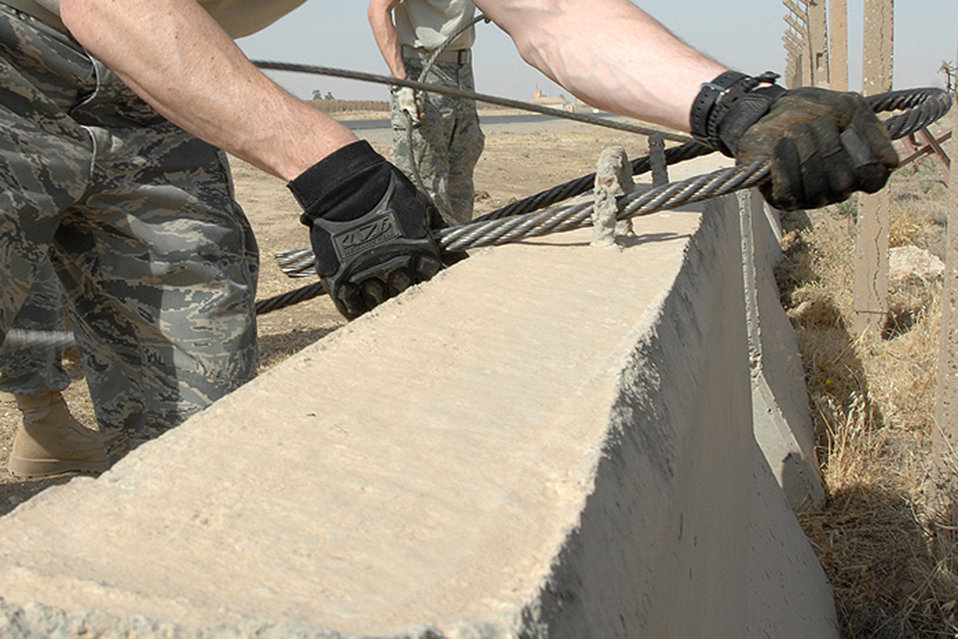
Volunteers create safety barrier

A volunteer weaves aircraft cables through jersey barriers June 5 near the Kirkuk Air Base, Iraq, flightline. Airmen here teamed up to place barriers, cables and signs around the airfield, mitigating vulnerabilities and lessening safety risks. This self-help airfield security project saved an estimated $500,000 by using existing assets and volunteers.